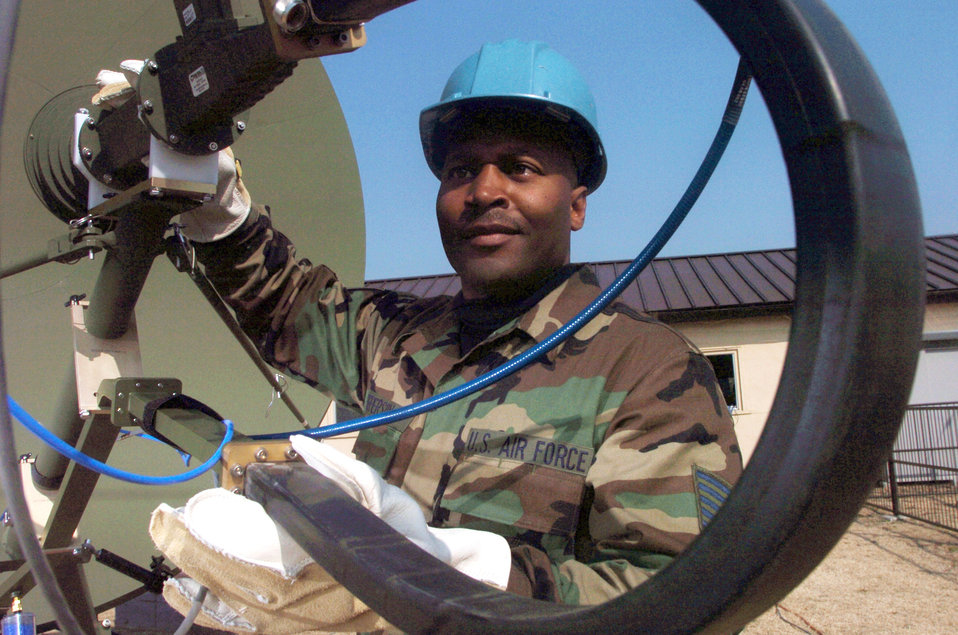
COM on guys

YOKOTA AIR BASE, Japan -- Tech Sgt. Douglas Jefferson sets up a mobile tactical super-high frequency satellite communications terminal during training here. The terminal provides reach-back, long-haul communications from deployed locations to defense information network systems. Sergeant Jefferson is a satellite wideband and telemetry maintenance technician assigned to the 374th Communications Squadron at nearby Camp Zama.